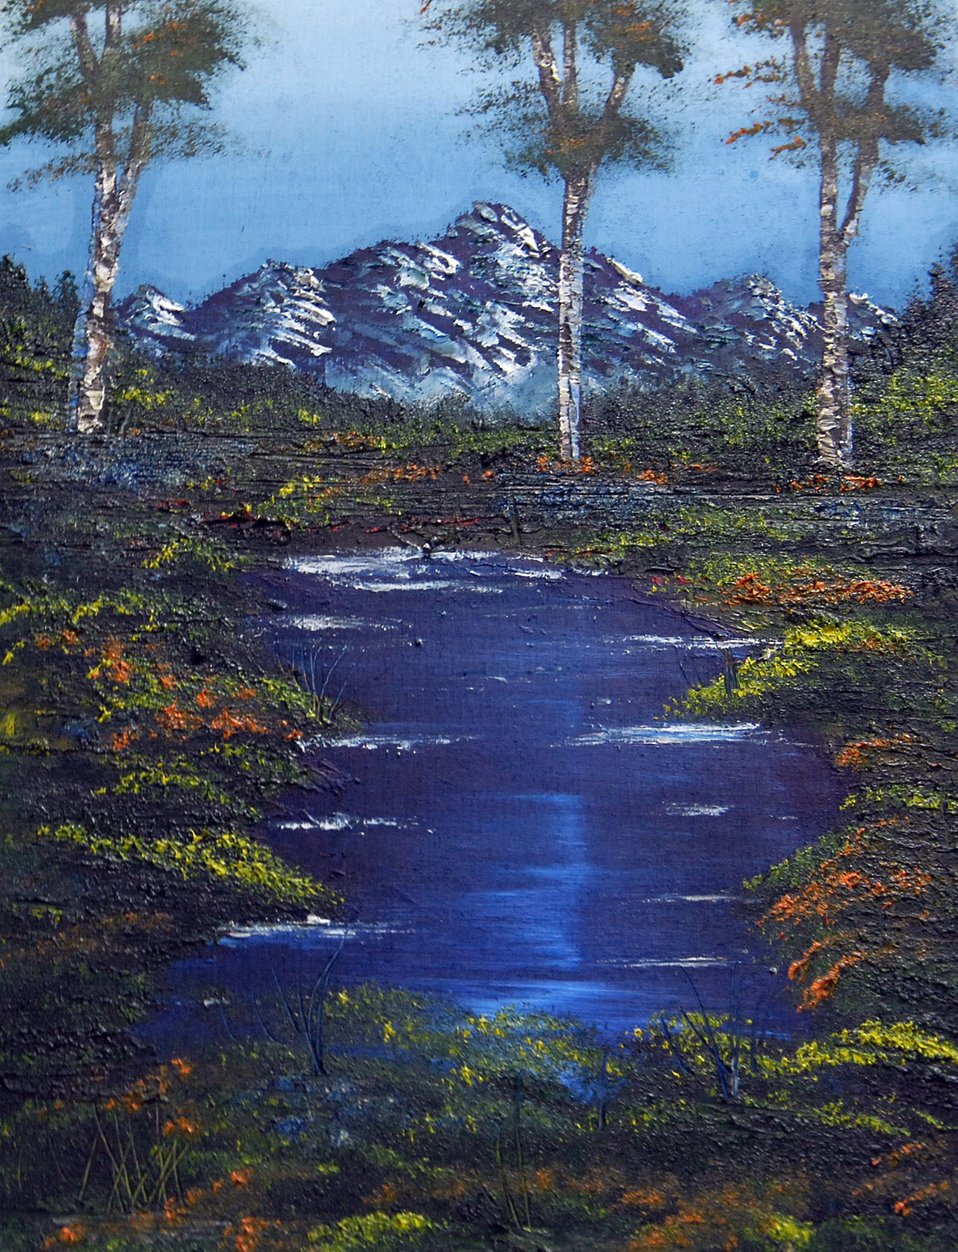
Manas NCO donates art to fund surgeries for needy children

The tranquil scene painted by Tech. Sgt. Robert Sommers was created from leftover wood scraps and will be sold to help pay for heart surgeries for children whose parents are unable to pay for the surgeries themselves. Sergeant Sommers is the 376th Expeditionary Civil Engineer Squadron operations management NCO in charge at Manas Air Base, Kyrgyzstan.